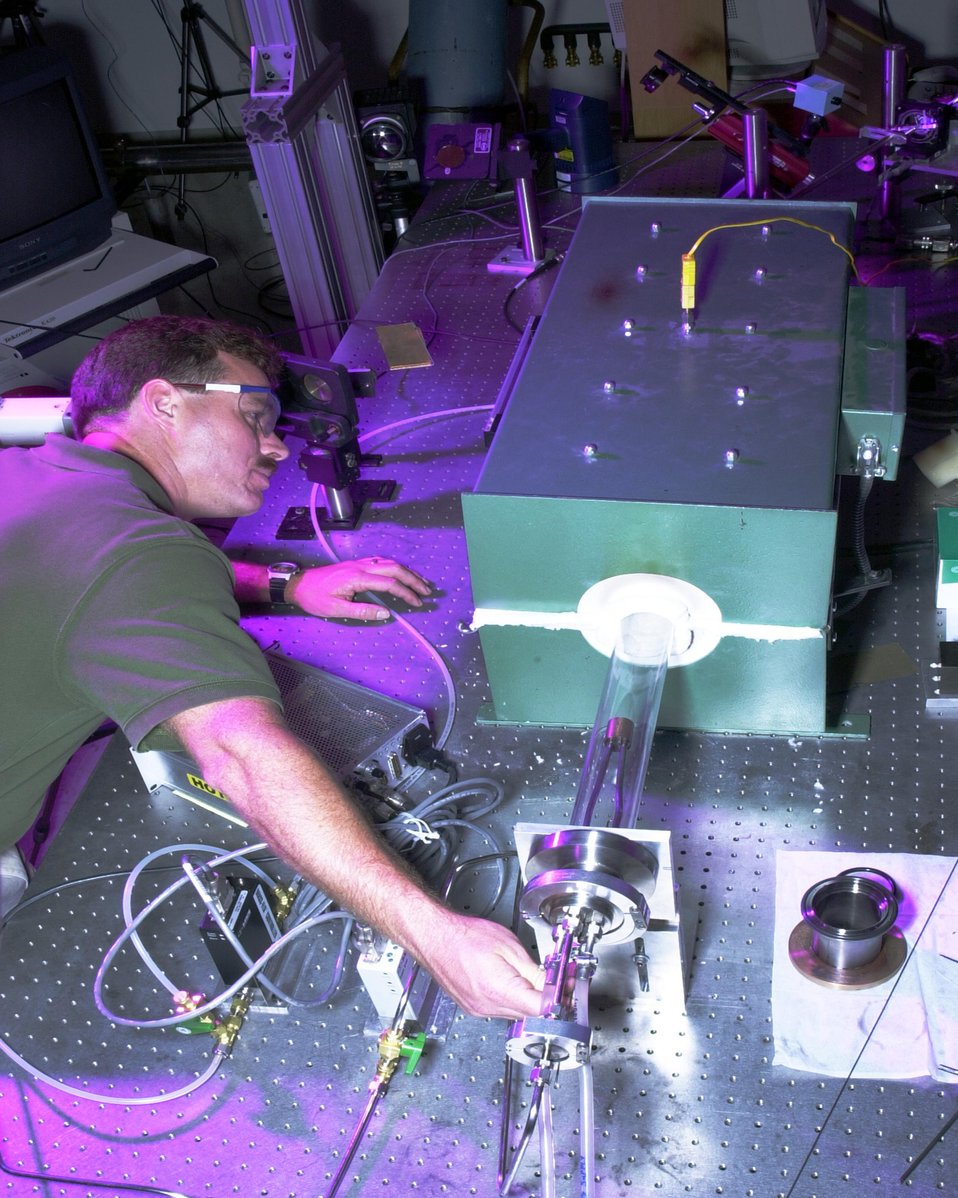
A SCIENTIST PREPARES THE NANOTUBE OVEN USED IN EXPERIMENTS IN CONJUNCTION WITH JEFFERSON LAB'S FREE ELECTRON LASERS (FELS) AT THE THOMAS JEFFERSON NATIONAL ACCELERATOR FACILITY.

THE FREE ELECTRON LASER HELPS SCIENTISTS FIND OUT HOW AND WHY CARBON NANOTUBES FORM. THEY ARE EXTREMELY STRONG AND VERSATILE CYLINDERS SO TINY THAT MILLIONS COULD FIT ON A TIP OF A PIN. IN BUNCHES, THEY LOOK LIKE BLACK SNOWFLAKES. CNTS CAN BE USED IN MOLECULAR AND QUANTUM COMPUTING AND MICROELECTROMECHANICAL SENSORS (MEMS) OR AS 'LAB-ON-A-CHIP'. CNTS CAN BE USED IN HIGHLY TECHNICAL COMPUTING AND SCIENTIFIC APPLICATIONS TO DETECT TOXINS AND NERVE ARGENTS IN TINY AMOUNTS. NANOTUBES MAKE POSSIBLE STRONGER YET LIGHTER STEEL.